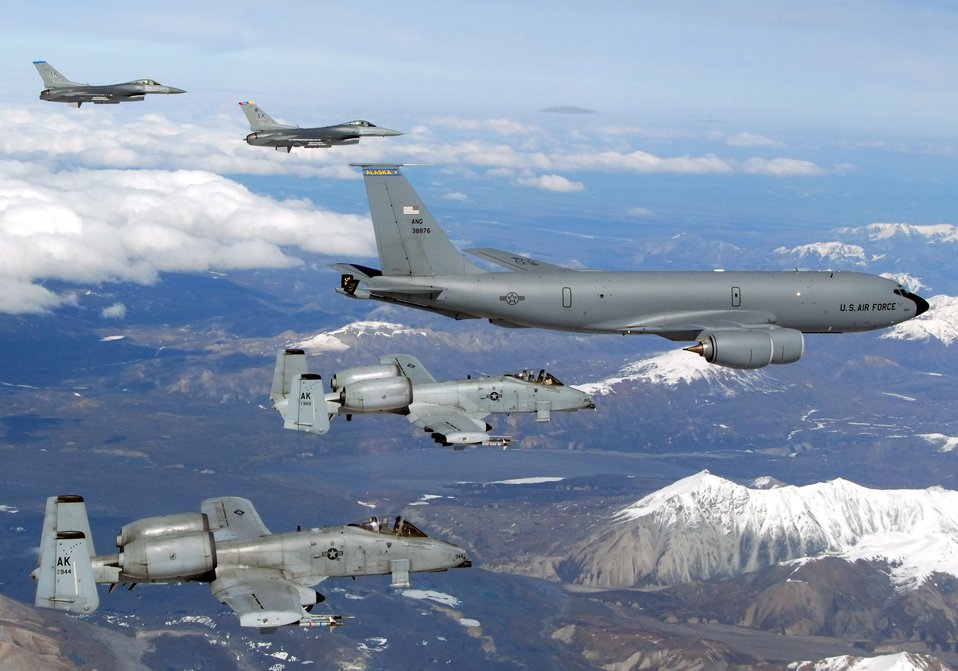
Final flight for fighters

A KC-135 Stratotanker with the Alaska Air National Guard's 168th Air Refueling Wing flies with two F-16 Fighting Falcons from the 18th Fighter Squadron and two A-10 Thunderbolt IIs from the 355th Fighter Squadron May 29 over Alaska. The five aircraft assigned to Eielson Air Force Base, Alaska, flew in formation for the last time due to the deactivation of the 18th and 355th Fighter Squadrons.